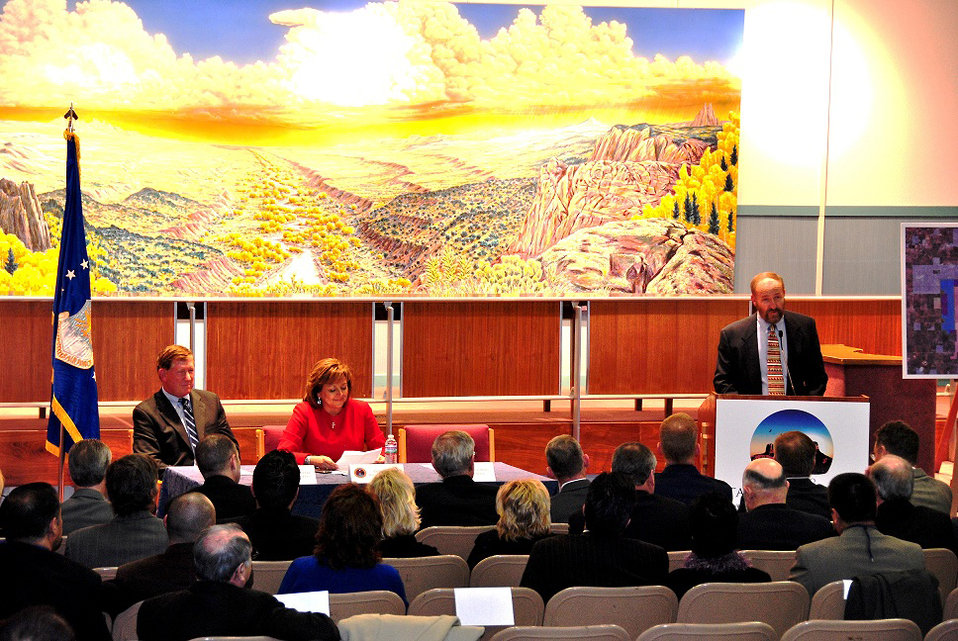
N.M. land grant allows AF to expand training

Assistant Secretary of the Air Force for Installations, Environment, and Logistics Terry Yonkers, New Mexico Gov. Susana Martinez and State Land Commissioner Ray Powell were among many Air Force, State of New Mexico and county officials at the lease signing ceremony on Jan. 18, 2012, in Santa Fe. The lease of 11,000 acres of state land will allow Cannon Air Force Base to expand Joint Air Force Special Operations training areas.